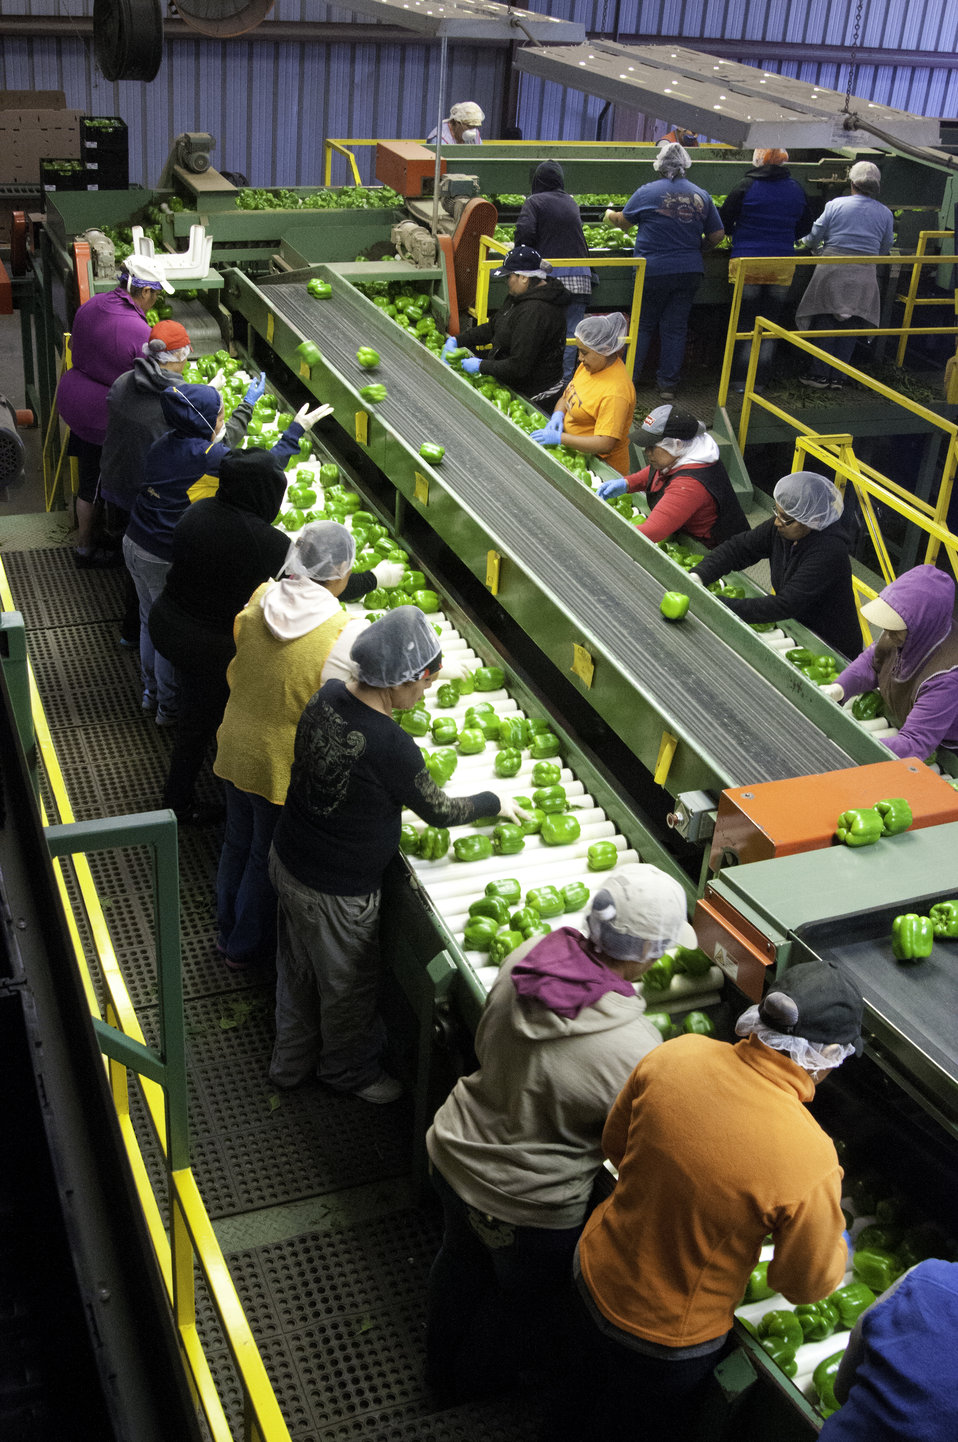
Migrant workers process green peppers on Uesugi Farms in Gilroy, CA on Wednesday, Aug. 28, 2013.